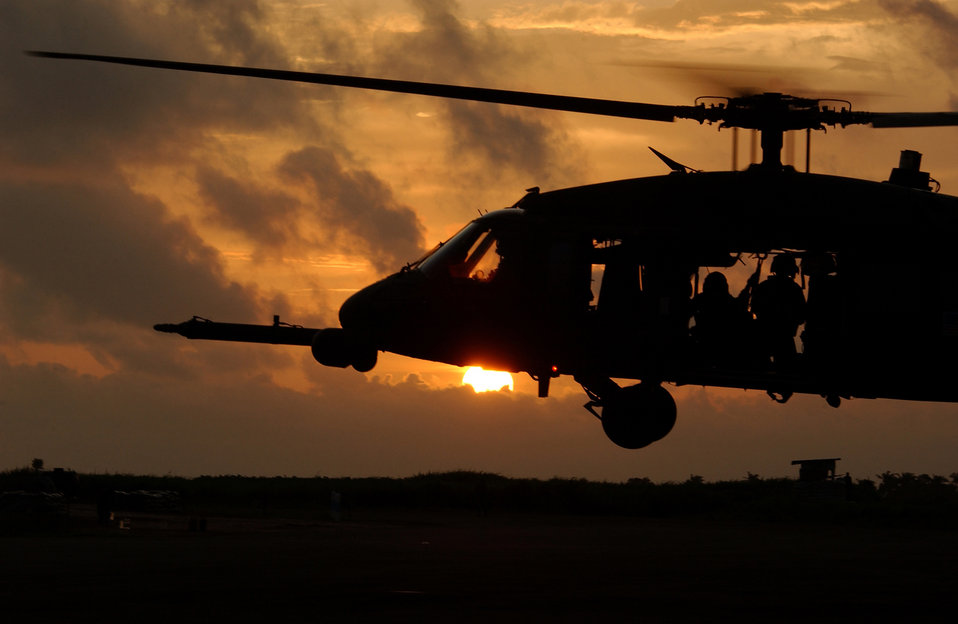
A sunny ride

LUNGI, Sierra Leone -- An HH-60G Pave Hawk helicopter prepares to land after training here. The helicopter is assigned to the 56th Rescue Squadron and is deployed with the 398th Air Expeditionary Group in Senegal.